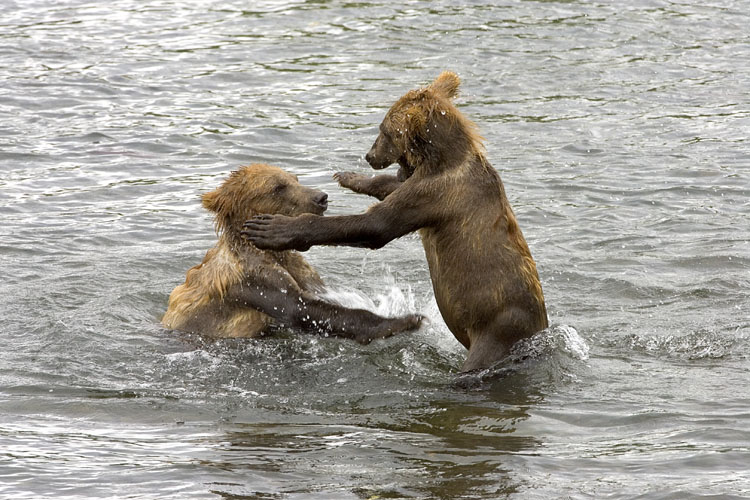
KOD Hildebrand (20)

Kodiak National Wildlife Refuge- Wildlife